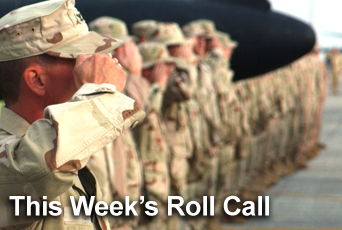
Roll Call

Air Force Roll Call is a one-page print product, posted online every Friday, written so supervisors can read it to their Airmen during morning roll calls or weekly gatherings.